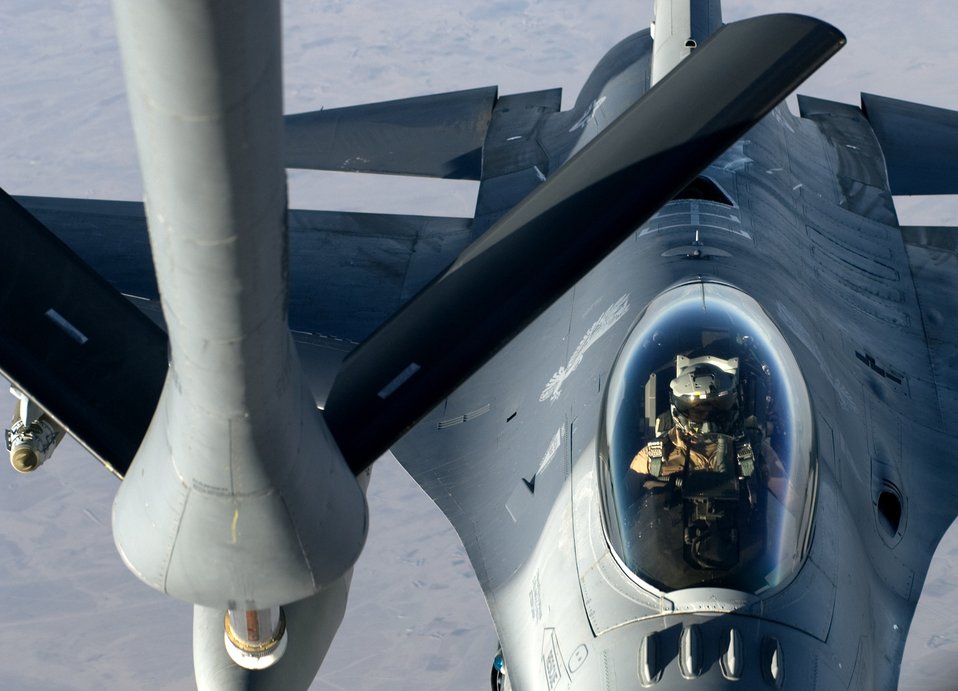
May 18 airpower summary

An F-16 Fighting Falcon refuels from a KC-135 Stratotanker over Iraq in support of Operation Iraqi Freedom. On May 18, U.S. Air Force, Royal Air Force, French Air Force and Republic of Singapore Air Force aerial refueling crews flew 48 sorties and off-loaded approximately 2.9 million pounds of fuel to 234 receiving aircraft.